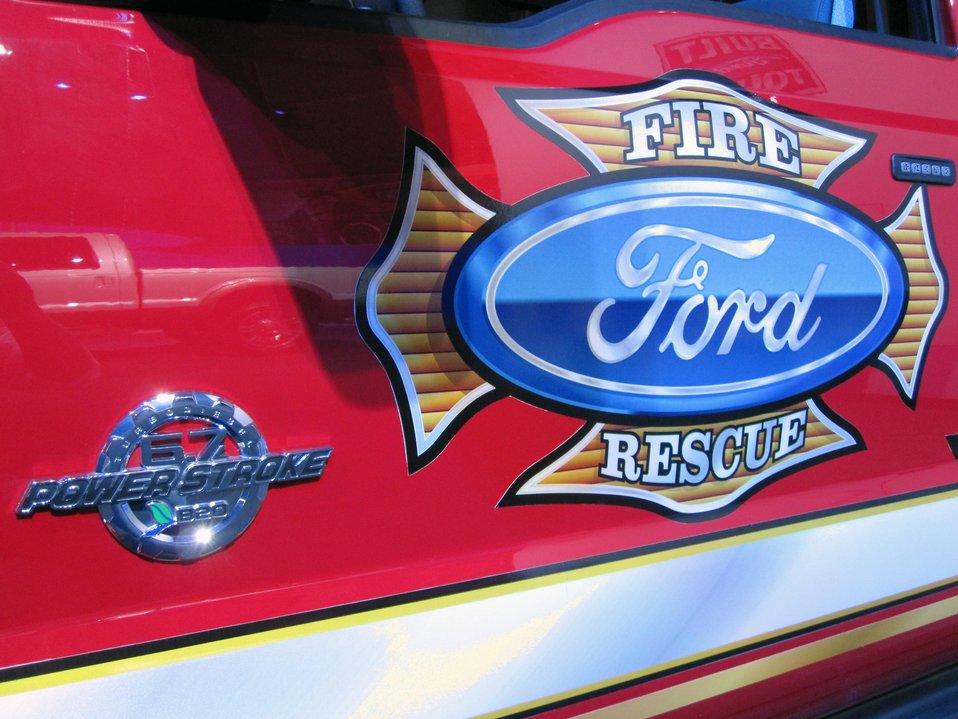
Hybrid Electric Vehicle (HEV), Plug-In Hybrid Electric Vehicle (PHEV), and Battery Electric Vehicle (BEV) on display at the 2010 Electric Vehicle Technology Demonstration in Washington, DC.